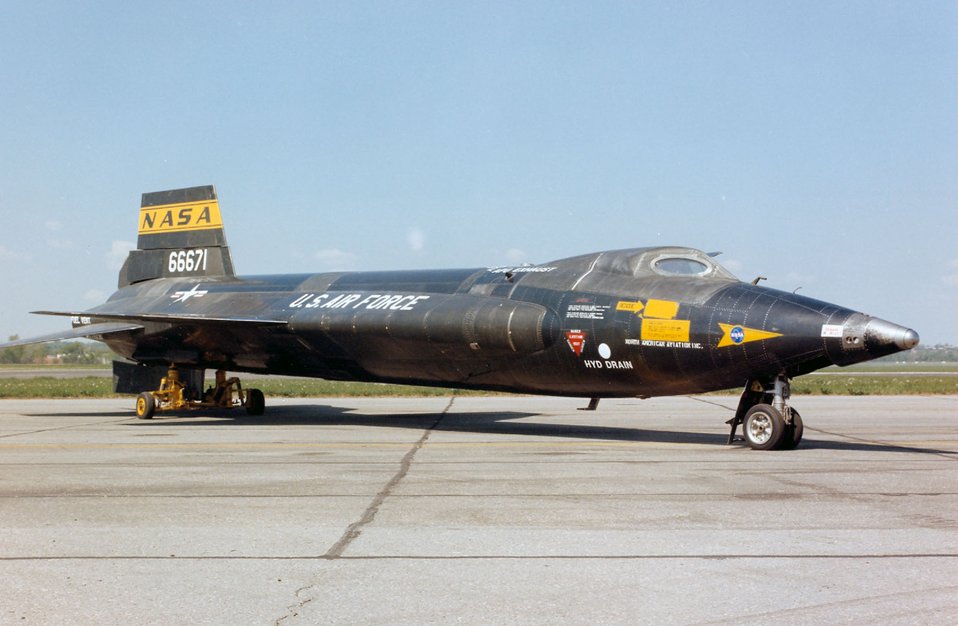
X-15A-2

The X-15A-2 from North American is on display at the National Museum of the U.S. Air Force in Dayton, Ohio.